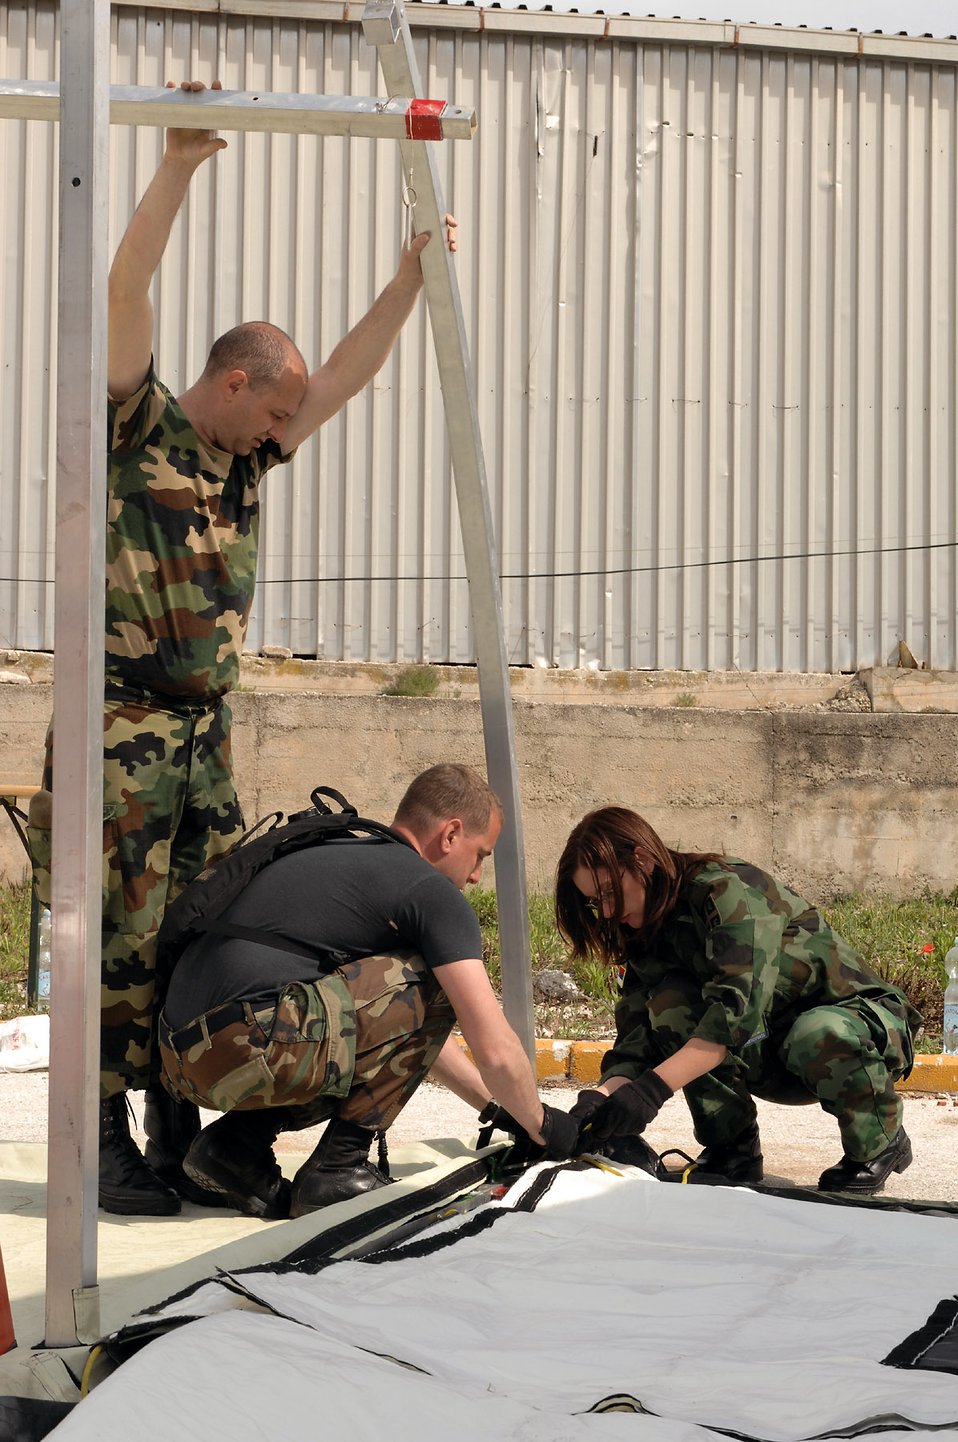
Knot typical training

Staff Sgt. Brian Schmit demonstrates knot tying techniques on an expeditionary medical squadron tent for Serbian army medical civilian Jelena Andjelkovic as Serbian army Lt. Col. Goran Milojkovic observes during the 2008 Medical Training Exercise in Central and Eastern Europe May 5 at Dijulje Training Base, Croatia. The training is one of 11 courses offered during the exercise. Fifteen nations are participating in the exercise from May 2 through 14. The exercise focuses on mass-casualty training scenarios and humanitarian aid in response to crises situations, and a Joint Chiefs of Staff regional/multilateral exercise sponsored by U.S. European Command. Croatia officials are hosting the 2008 exercise, which drew about 400 multinationals in support of the Partnership for Peace initiative. Sergeant Schmit is assigned to the 458th Expeditionary Medical Squadron.